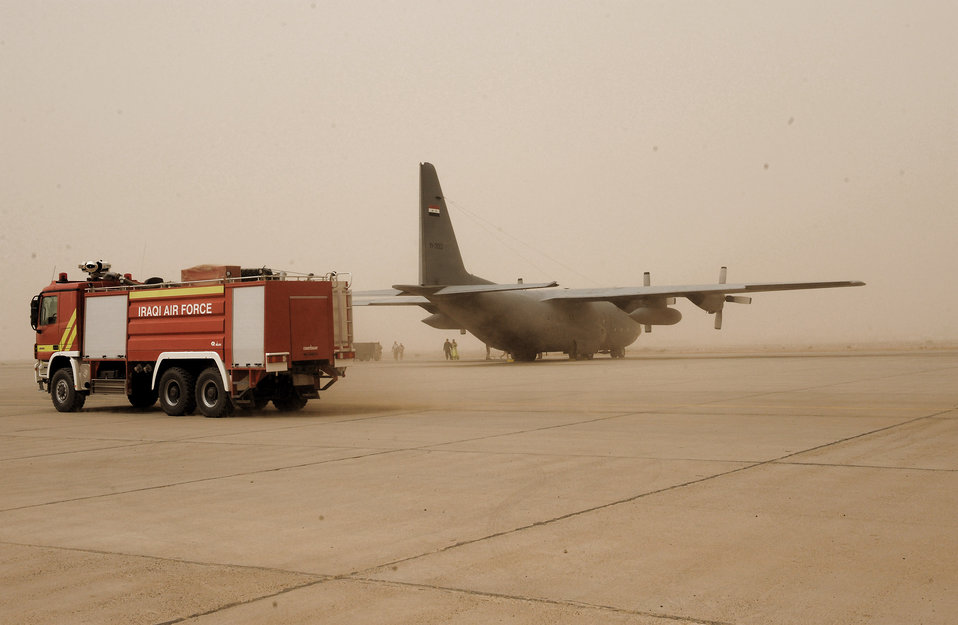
Iraqi air force soars through U.S.-guided exercise

Iraqi firemen respond to a simulated fire on an Iraqi C-130 June 16 at New Al Muthana Air Base, Iraq. The simulation was part of a ground emergency exercise to test the Iraqi's notification and response procedures.